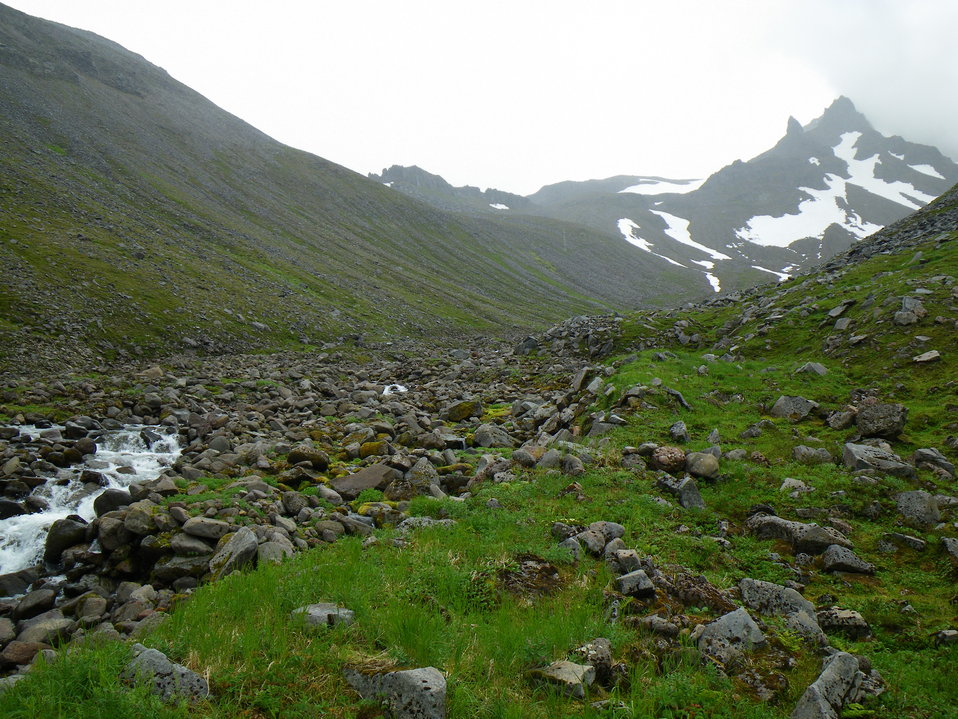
Izembek Wilderness

Wilderness near Frosty Peak, Izembek National Wildlife Refuge
Photo by Kristine Sowl,
USFWS, Public Domain